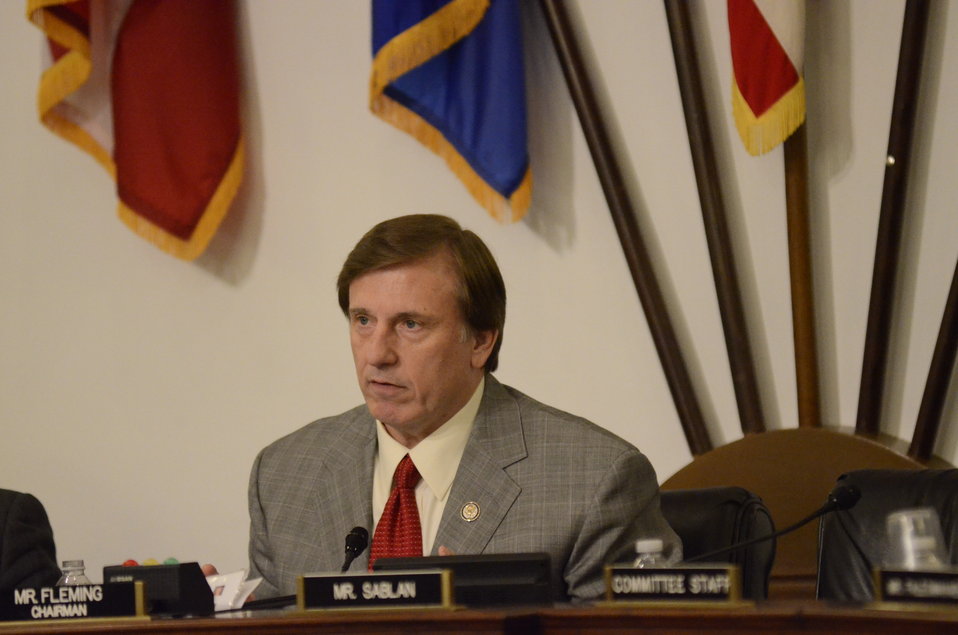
Chairman of the Natural Resources Committee Congressman John Fleming (LA) chairs a hearing on Retailers & Entertainers Lacey Implementation & Enforcement Fairness Act & Freedom from Over-Criminalization & Unjust Seizures Act at the Longworth House Office Building in Washington, D.C. on Tuesday, May 8, 2012.